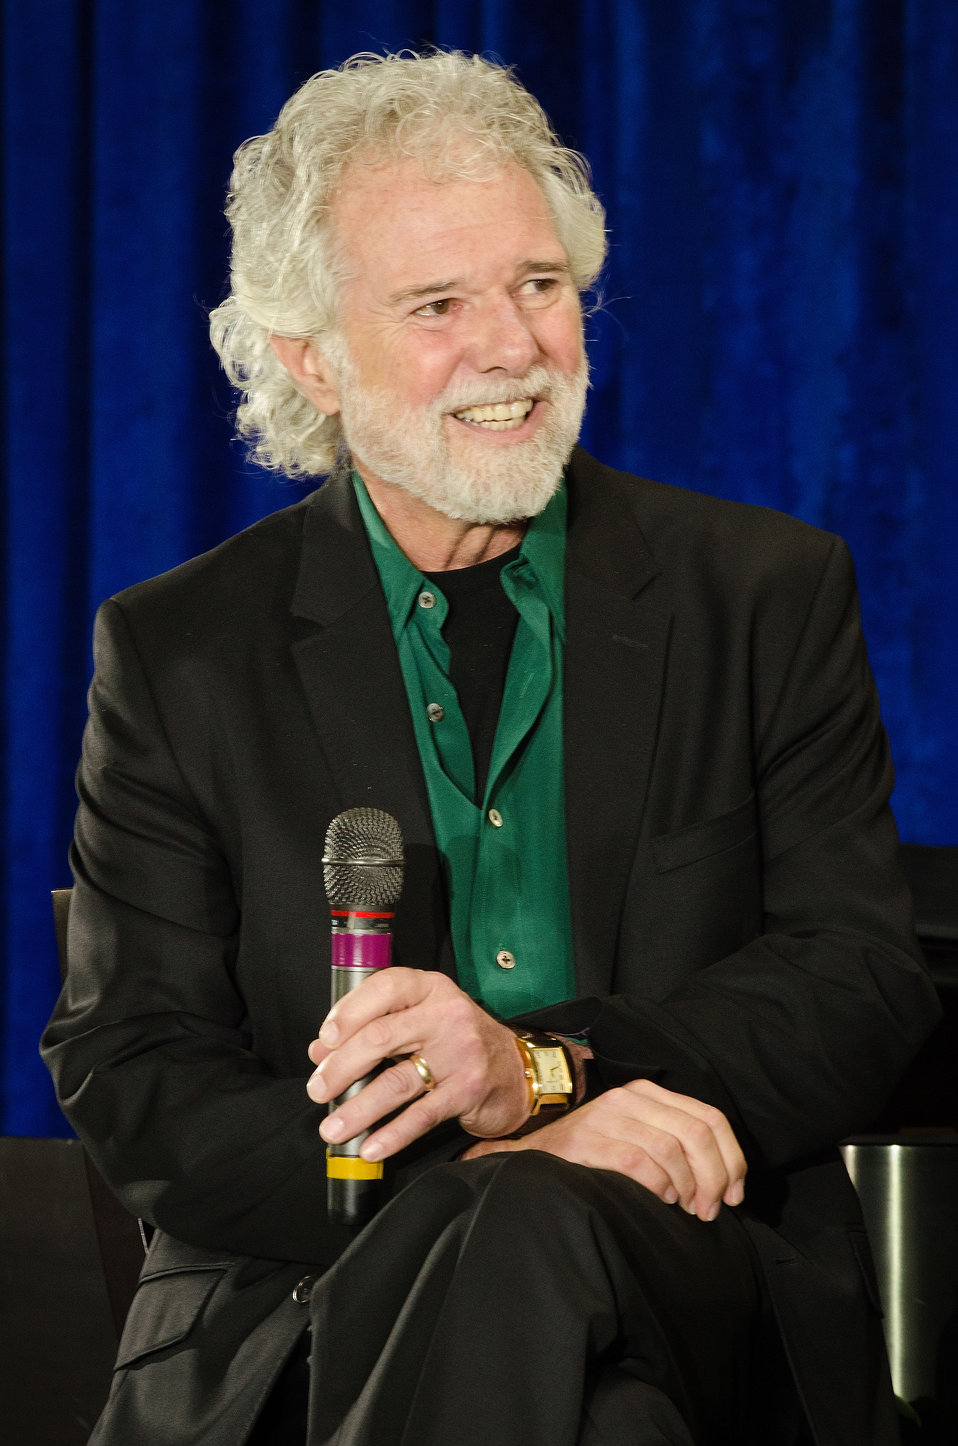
Chuck Leavell Rolling Stones keyboardist, conservationist and Georgia tree farmer spoke about the importance conservation and our National Forests at the United States Department of Agriculture's 150th Anniversary celebration in Washington, D.C., on Tuesday, May 15, 2012.